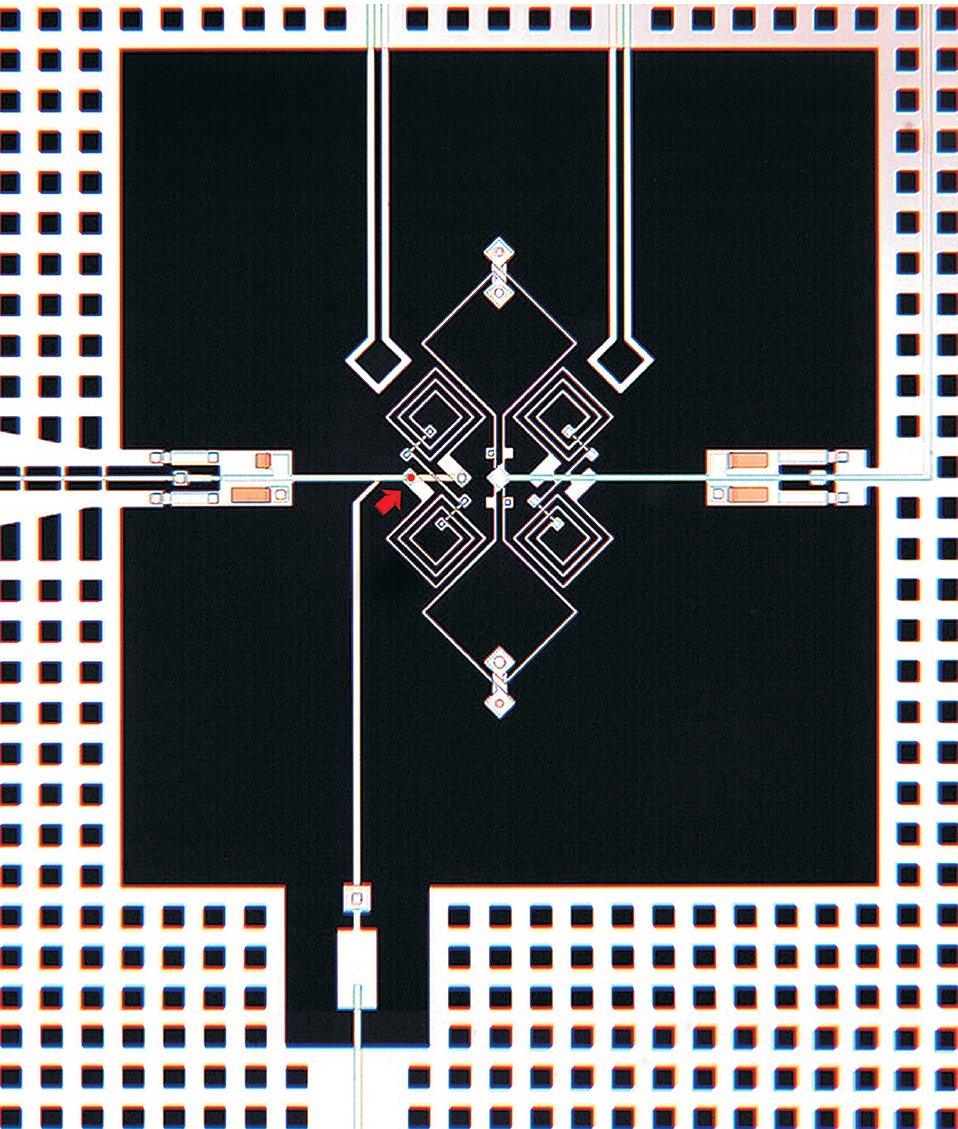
Qubit; artificial atom

An 'artificial atom' is made with a superconducting circuit. The red arrow points to the heart of the qubit - the Josephson junction that can represent a 0, 1, or both values at once.